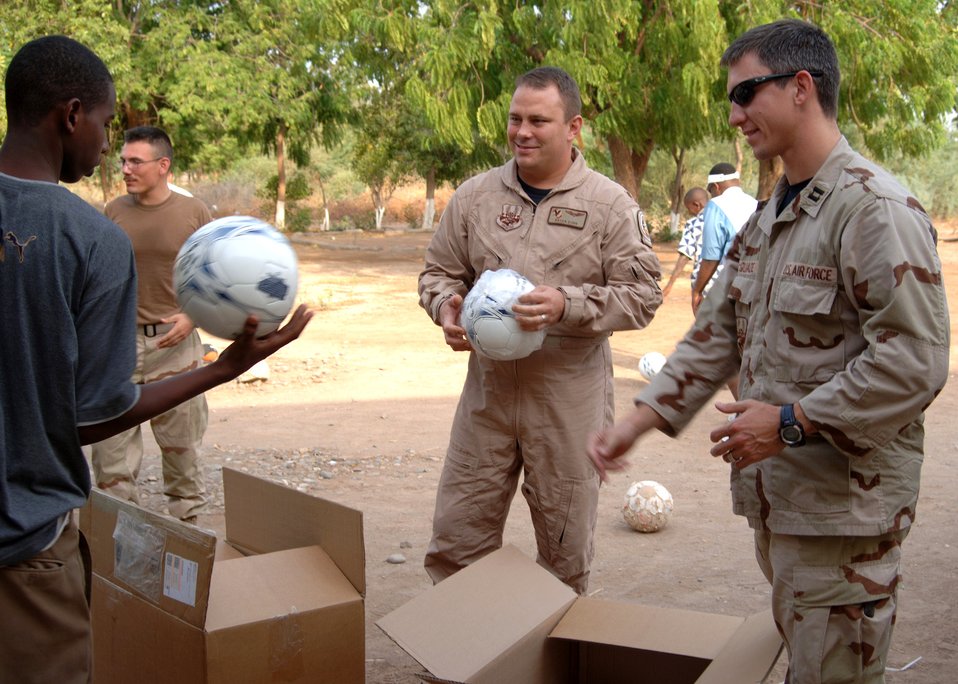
Donation provides fun for Djibouti boy?s orphanage

Maj. Bryan Dunn (center) and Capt. Andy McQuade hand out soccer balls to boys at a local orphanage in Djibouti. More than 80 soccer balls were donated from soccer clubs in Georgia and Colorado and from several colleges across the United States. Major Dunn and Captain McQuade are assigned to the Combined Joint Task Force-Horn of Africa.